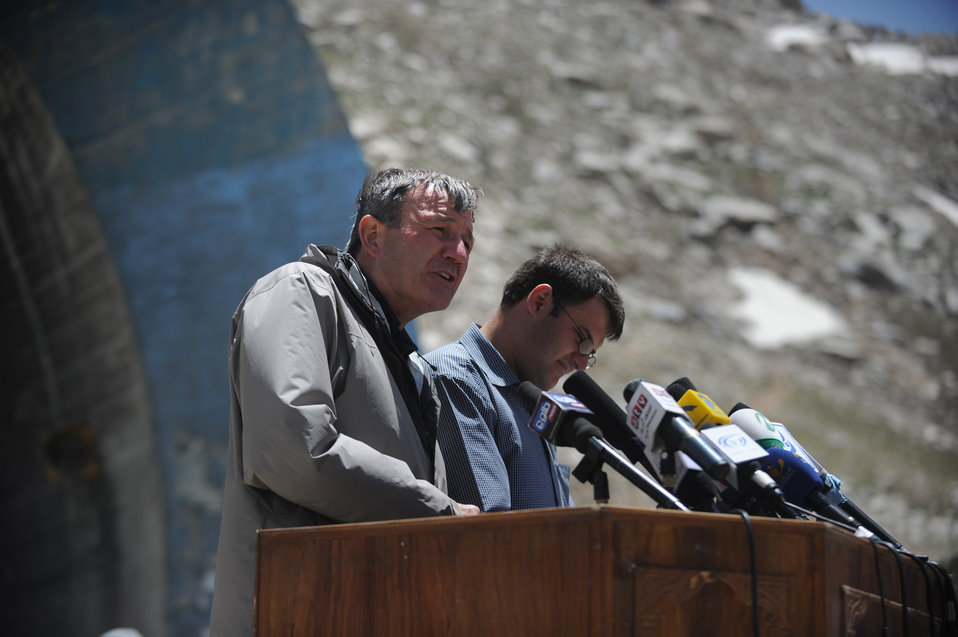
U.S. Ambassador Karl W. Eikenberry makes remarks during a ceremony to mark the beginning of renovations at the Salang Tunnel on the border of Parwan and Baghlan Provinces, Afghanistan, on Wednesday, June 15, 2011. (S.K.Vemmer/Department of State)